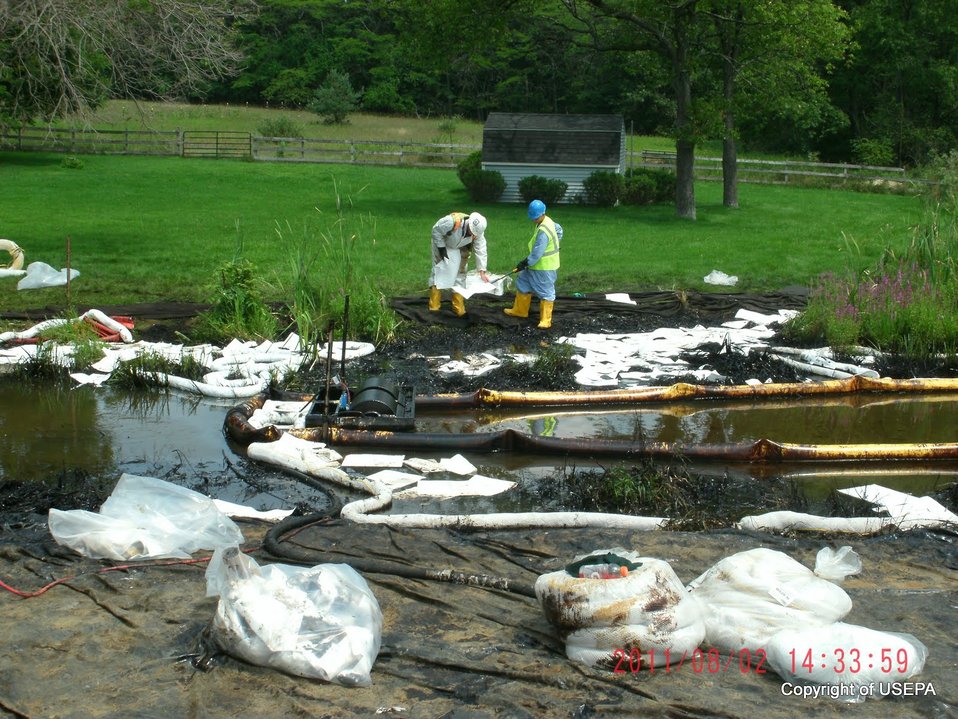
Contaminated soil

August 2, 2010 - Crew clad in personal protective equipment works picking up contaminated soil along the banks of the Kalamazoo River.